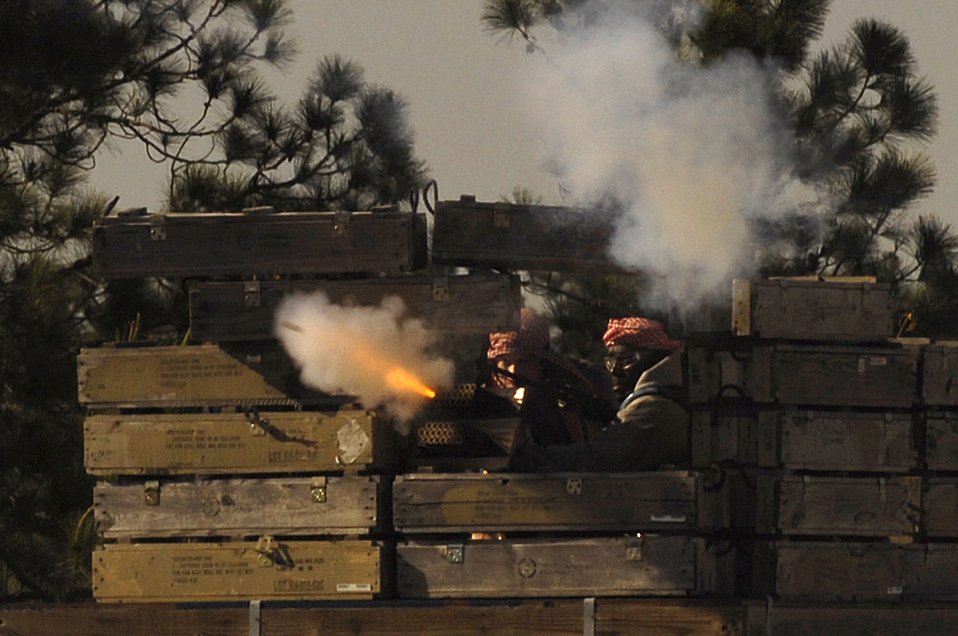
Attack controllers train colleagues for combat

Air Force members portraying opposition forces launch simulated artillery at a convoy April 17 during Atlantic Strike 5 at Avon Park, Fla. Atlantic Strike is a joint forces training event involving joint terminal attack controllers from the Army, Air Force and Marines and is held semi-annually at the Avon Park Air Ground Training Complex.